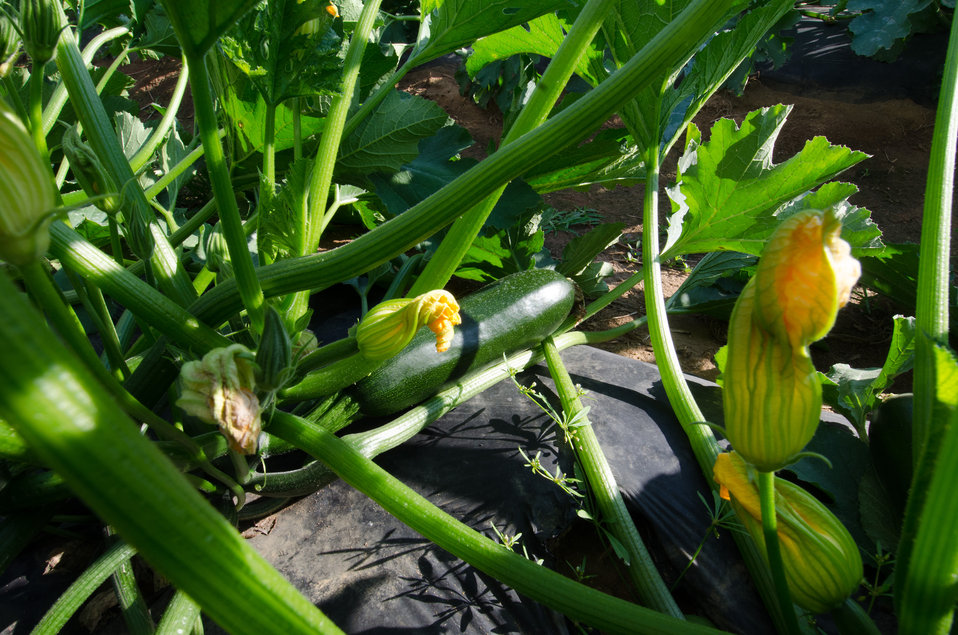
Kirby Farms third-generation family farm in Mechanicsville, VA, uses micro irrigation (drip watering) and plastic mulch (row covering) to efficiently grow green zucchini squash, on Friday, Sept 20, 2013. Water is pumped through a filtration/regulator system to flexible distribution pipes and hard connectors. Emitter hoses can be driven in where needed. Pressurized hoses emit water at a very slow rate near the base of the plants. Computers or timers provide additional controls. A micro irrigation system, also known as drip or trickle irrigation, is used to water directly to the plant root zone utilizing surface or subsurface applicators. For more information please see www.nrcs.usda.gov/Internet/FSE DOCUMENTS/nrcs141p2 024038...
Plastic sheeting is a form of mulch. It conserves soil moisture and reduces energy
use associated with irrigation, moderates soil temperature, provide erosion control, suppresses weed growth, facilitates the establishment of vegetative cover, improves soil quality, and reduces airborne particulates.